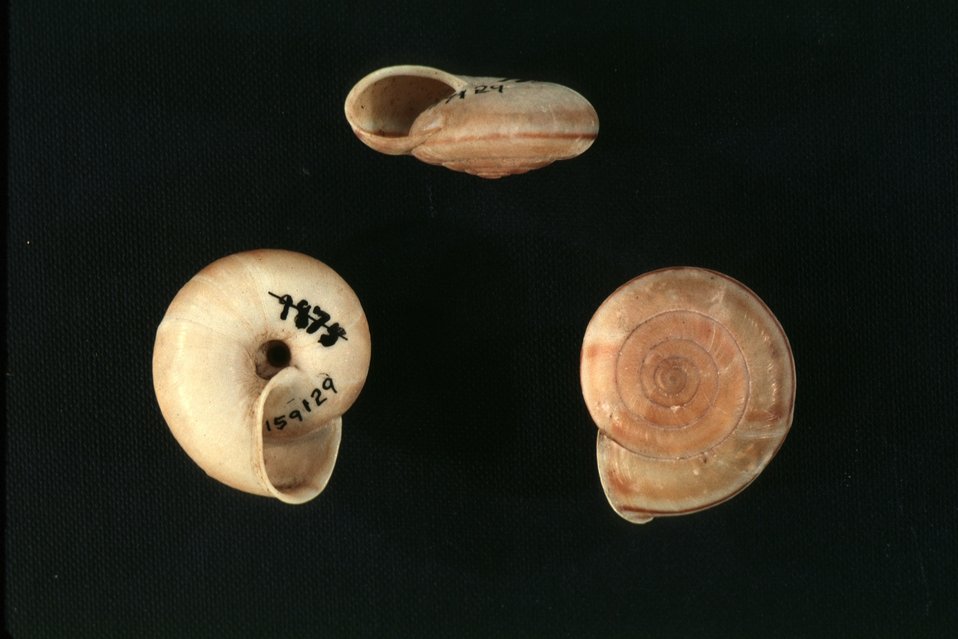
Shasta sideband (Mondenia troglodytes troglodytes).